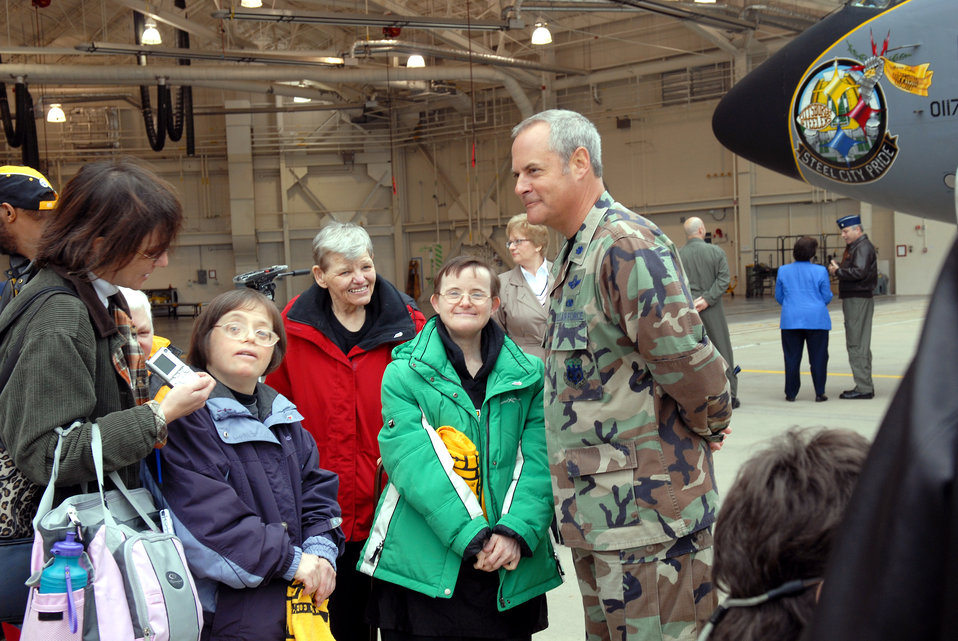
Air Guard unit shows off its 'Steel City Pride'

Lt. Col. Don Accamando chats with some of the residents of the Allegheny Valley School and members of the Pittsburgh Steelers football organization Oct. 18 who were on hand to help the Airmen of the Pennsylvania Air National Guard's 171st Air Refueling Wing christen the new